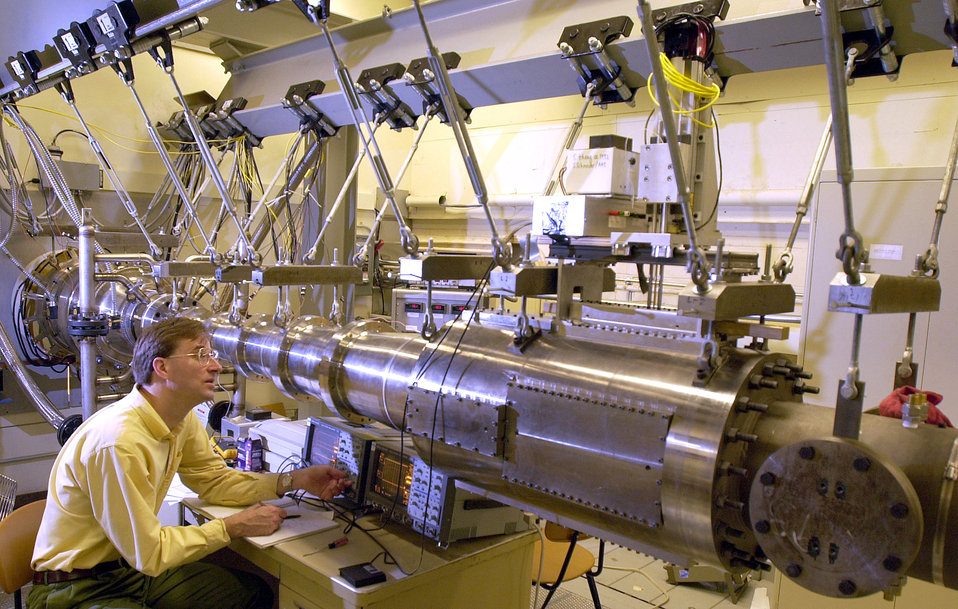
Very high-speed wind

Steven Schneider, an aerospace engineer and professor in Purdue's School of Aeronautics and Astronautics, operates the university's one-of-a-kind wind tunnel, used to help design advanced aircraft that travel at hypersonic speeds.